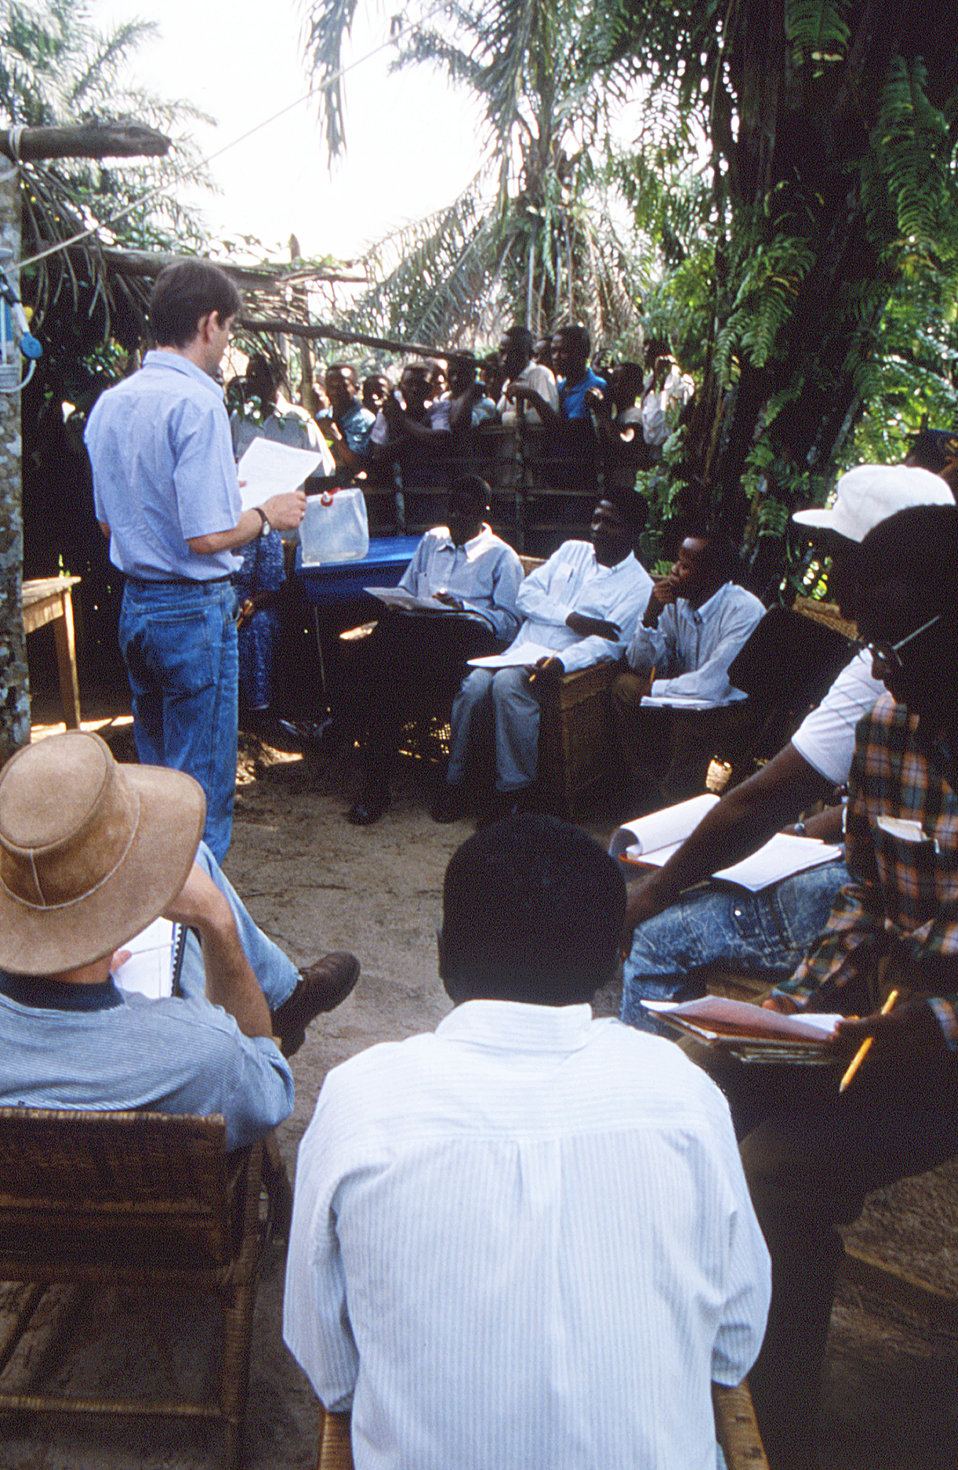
This image was created during an investigation into an outbreak of monkeypox, which took place in the Democratic Republic of the Congo (DRC), 1996 to 1997, formerly Zaire. Pictured here, was French epidemiologist Dr. Philippe Malfait, and Richard Peabody, from the European Programme for Intervention Epidemiology Training (EPIET), conducting a meeting in the town of Ekanga before heading out into the surrounding villages.